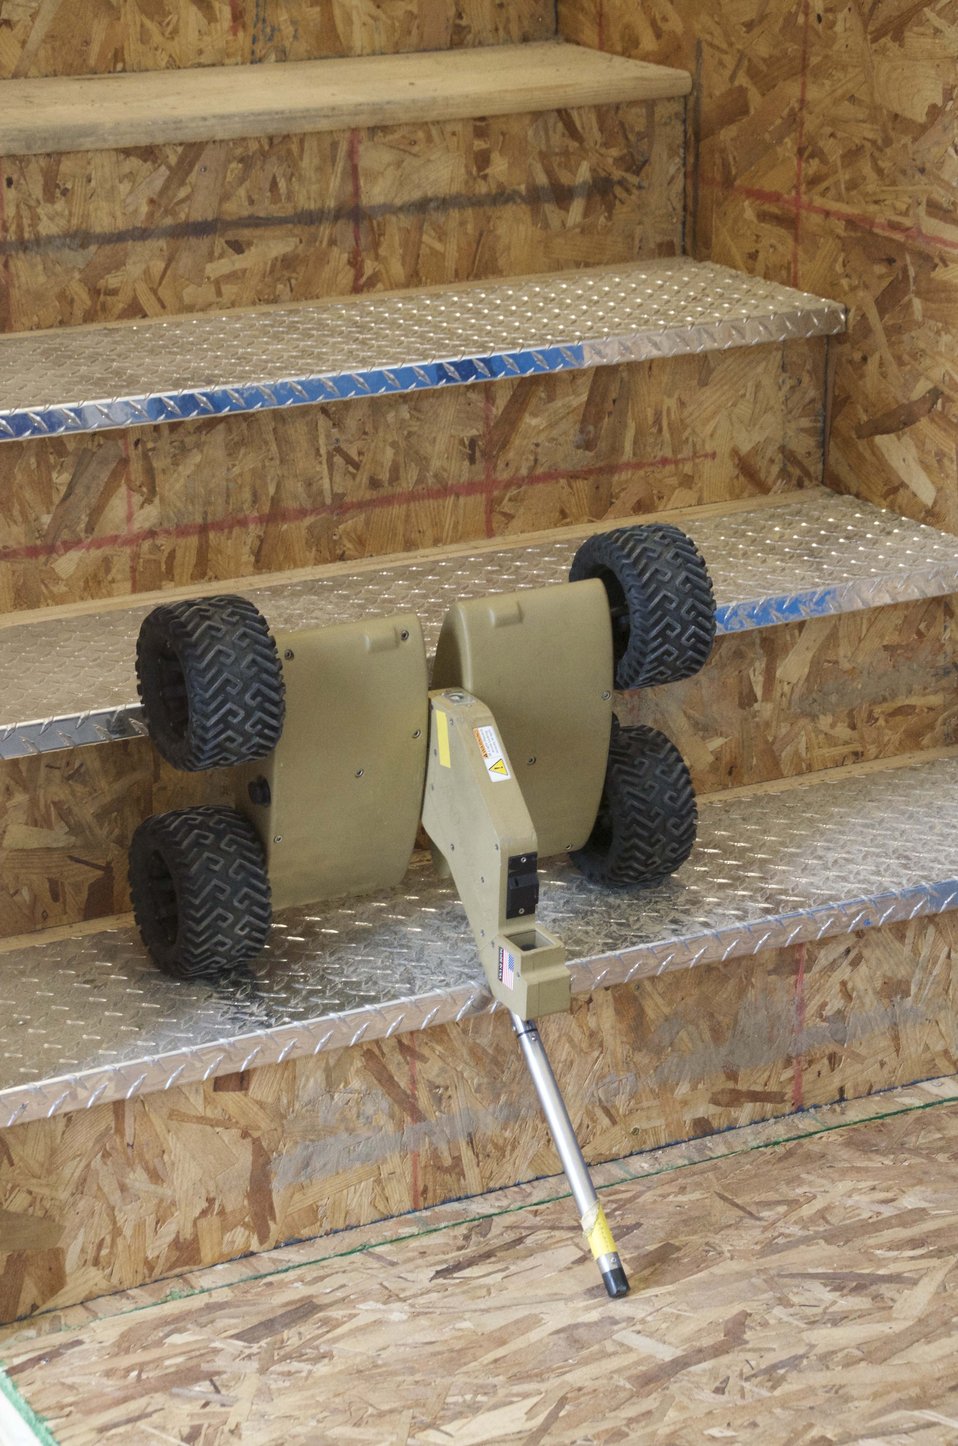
Robot Climbing Stairs

The smallest of the Montgomery County Bomb Squad’s robots attempts a stair-climbing challenge.

Development of test methods at the NIST Robot Test Facility is funded in part by the NIST Office of Law Enforcement Standard's Counterterrorism and Response Technologies program.